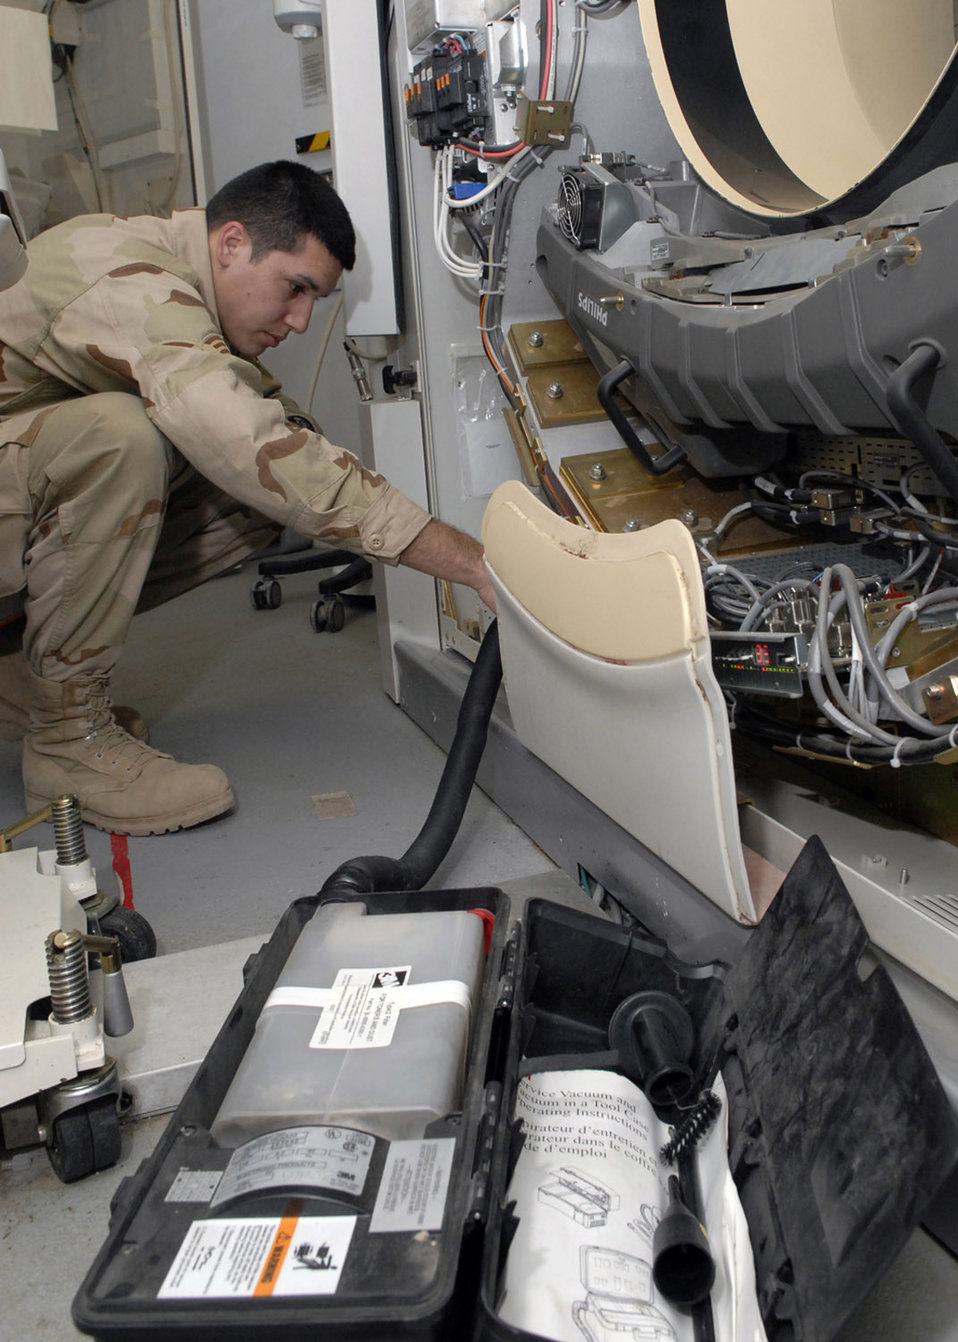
Supporting warrior care

Senior Airman Bobby Flores cleans the filters of a CAT scanner Oct. 18 in the Air Force Theater Hospital at Balad Air Base, Iraq. The filters are cleaned monthly to ensure the machine performs optimally. Airman Flores is currently deployed from Lackland Air Force Base, Texas, to the 332nd Expeditionary Medical Support Squadron.